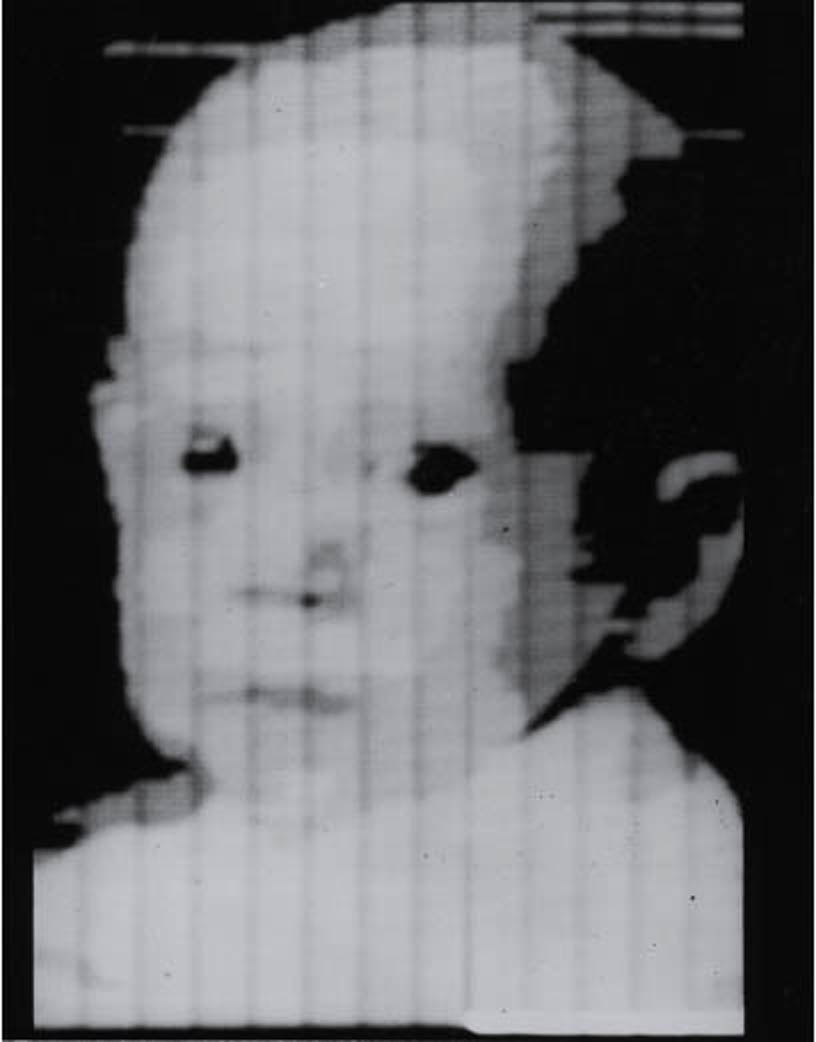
Fiftieth Anniversary of First Digital Image Marked

The first digital image made on a computer in 1957 showed researcher Russell Kirsch's baby son.